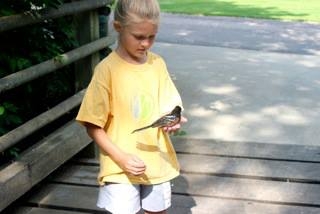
Jane Doerges stares in amazement at a towhee perched on her hand. Doerges helped band the bird. An avid birder herself, Doerges hopes to someday become an ornithologist or the U.S. Fish & Wildlife Project Leader of D.C. Booth HNFH.